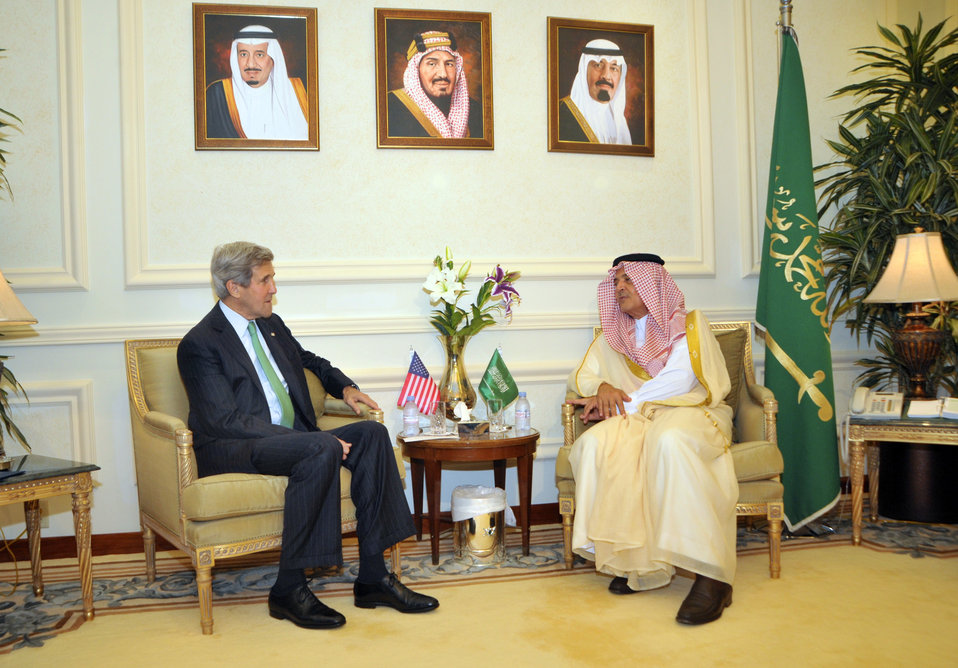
Secretary Kerry Meets With Saudi Foreign Minister al-Faisal

U.S. Secretary of State John Kerry meets with Saudi Foreign Minister Prince Saud al-Faisal in Jeddah, Saudi Arabia, on June 25, 2013.